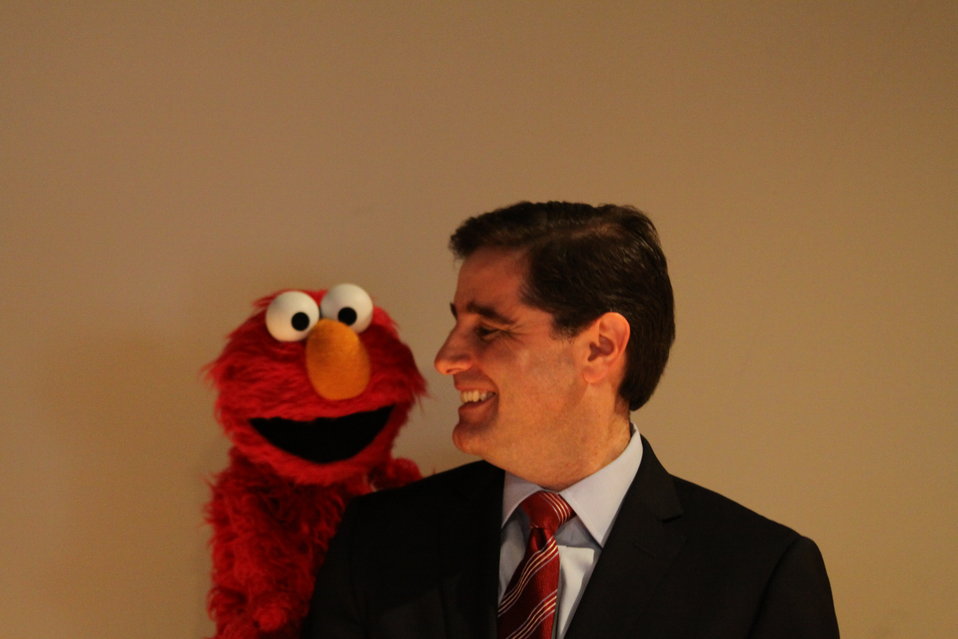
March 12, 2010- Smithsonian Broadband with Elmo